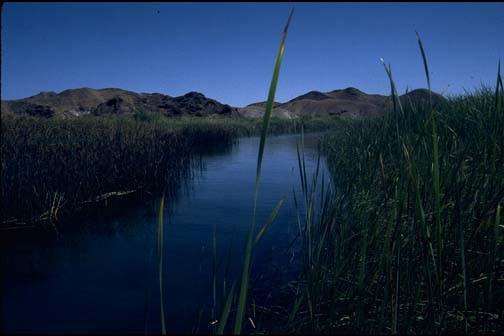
Peaceful backwaters of Squaw Lake.